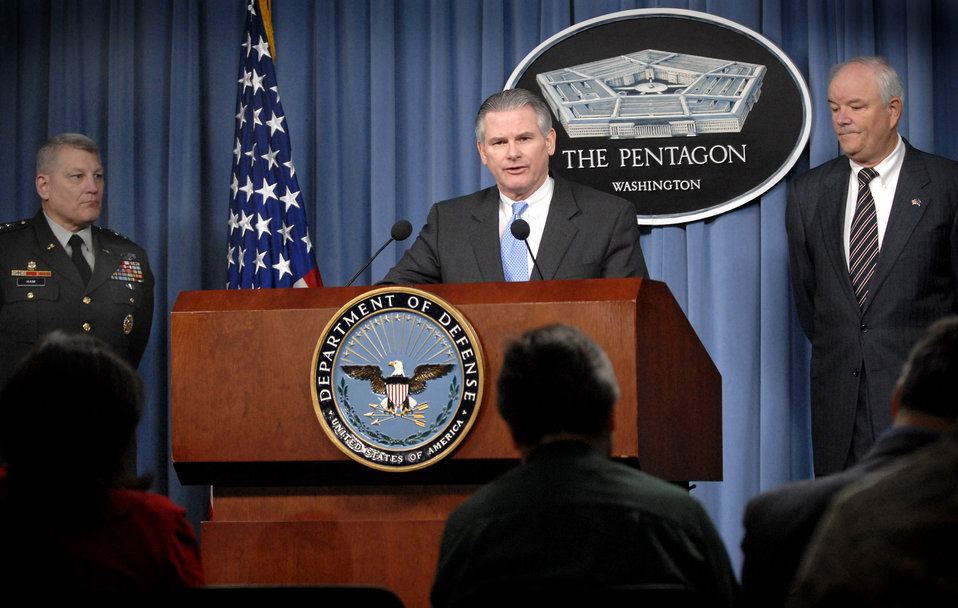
DoD identifies error in shipment to Taiwan

Principal Deputy Under Secretary Ryan Henry answers questions from reporters about nose cone assemblies for Minuteman missiles during a press briefing with Air Force Secretary Michael W. Wynne (right) and Director for Operations, Joint Staff, Lt. Gen. Carter Ham (left). The non-nuclear assemblies were mistakenly shipped to Taiwan in 2006 and recently regained control by the U.S. Military.